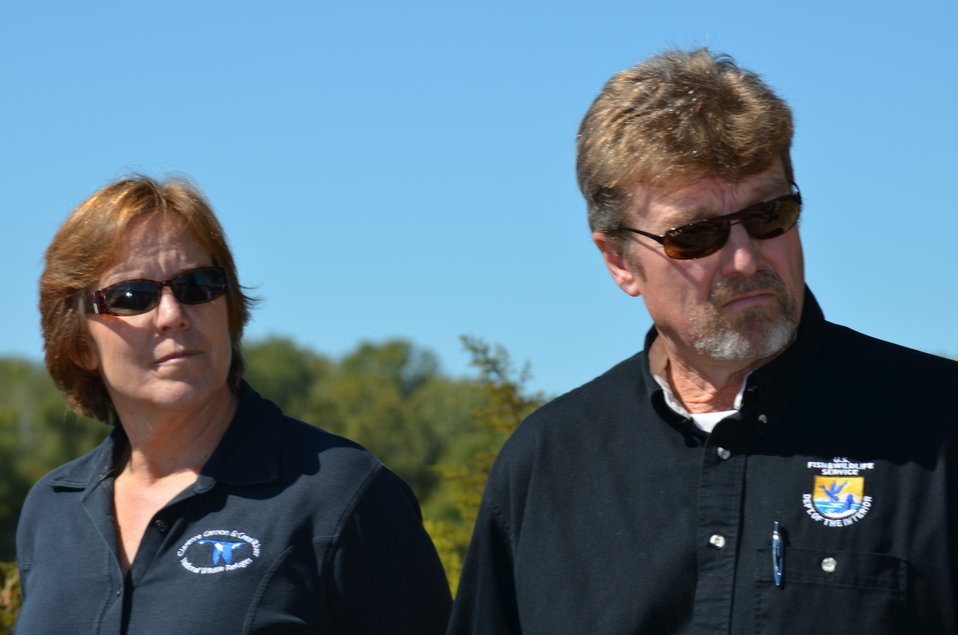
Refuge leadership

USFWS Refuge staff tour the confluence point with partnership members. (Left) Asst. Refuge Manager of Clarence Cannon National Wildlife Refuge Candy Chambers, (Right) Refuge Manager of Big Muddy National Fish and Wildlife Refuge Tom Bell. USFWS/Ashley Spratt